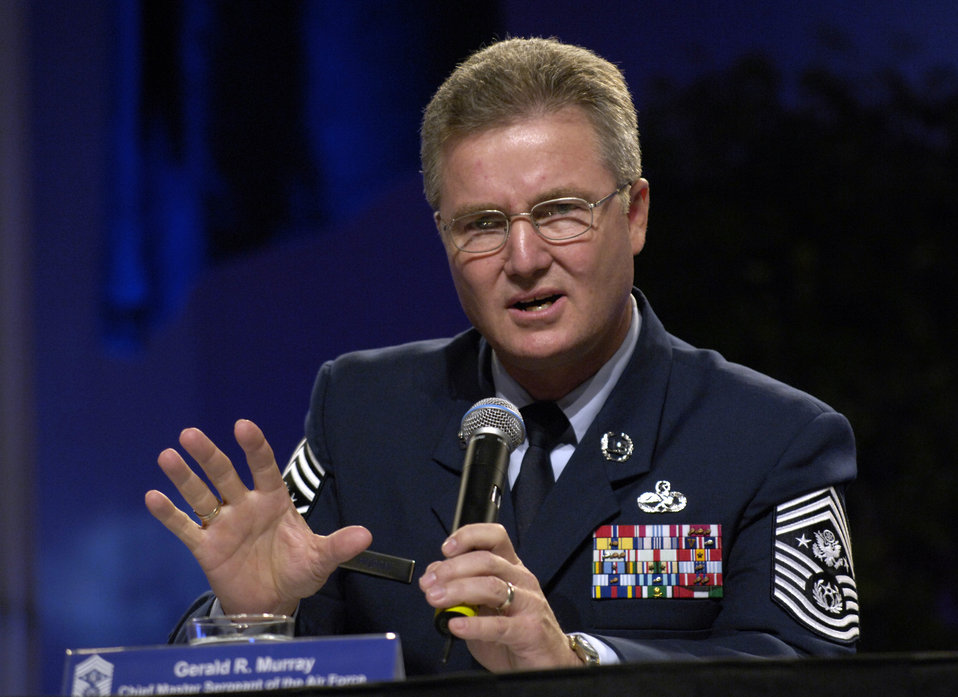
Command chiefs address Airmen's concerns

WASHINGTON -- Chief Master Sgt. of the Air Force Gerald R. Murray speaks at a command chiefs' panel during the Air Force Association's 2005 Air and Space Conference and Technology Exposition here Sept. 12. The panel consisted of command chiefs from across Air Force major commands.